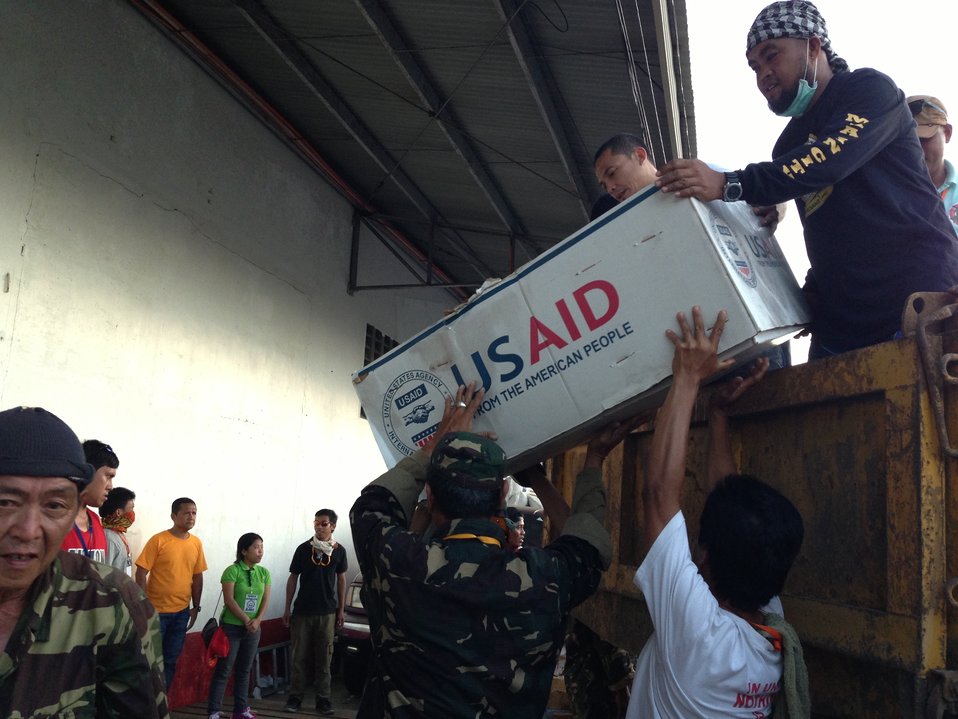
Emergency Relief Arrives in Tacloban

Emergency relief supplies flown into the airport are trucked to a nearby warehouse at Tacloban Task Force Headquarters and sorted on November 16, 2013. From here, the Philippine Department of Social Welfare and Development, who is the lead local agency in charge charge of aid distribution, gets the commodities out to affected municipalities.